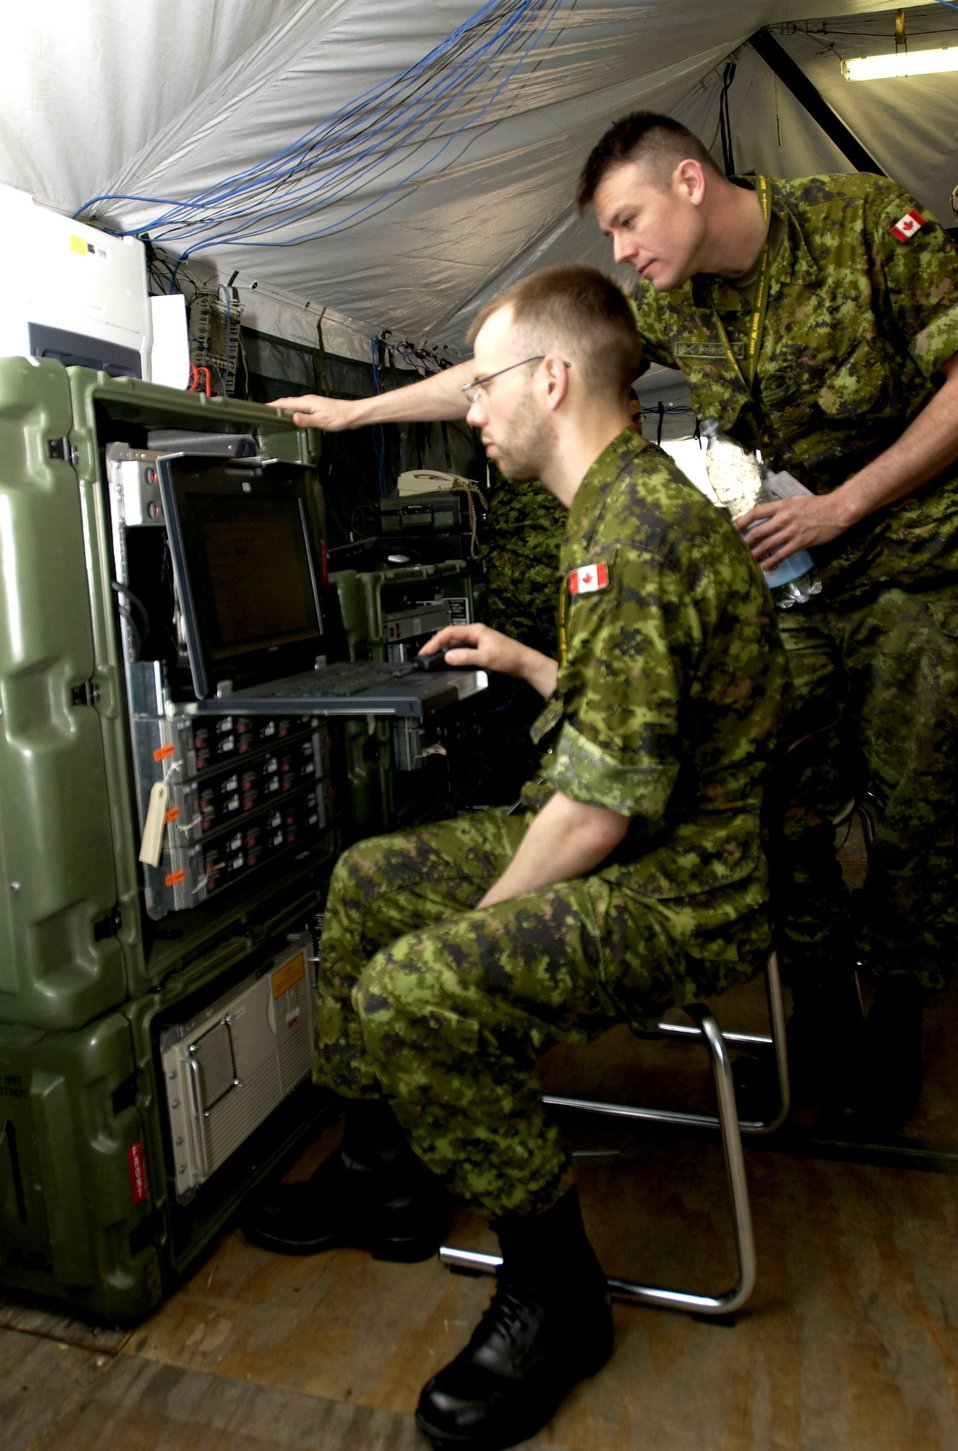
Multinational communicators network at seminars

Canadian army Master Cpl. Terry Perron double checks the satellite connection of tactical satellite communications while Pfc. Frederick Leproham observes. They are in Lager Aulenbach, Baumholder, Germany, participating in Combined Endeavor 2007, a U.S. European Command-sponsored exercise that brings the U.S. and other nations together, especially those in NATO or Partnership for Peace, to plan and execute interoperability testing of command, control, communications and computer systems in preparation for future combined humanitarian, peacekeeping and disaster relief operations.